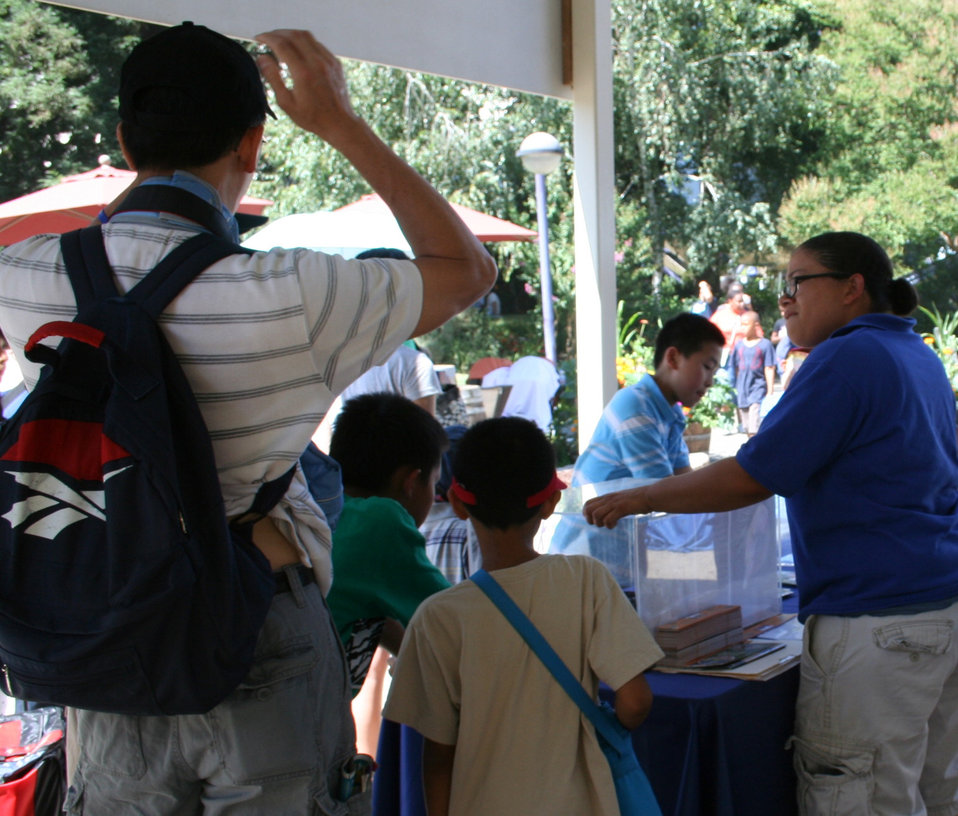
The condor display at the front of the booth

For the first time DOI agencies [US Fish & Wildlife Service, Bureau of Reclamation and Bureau of Land Management] joined together to host an America's Great Outdoors Booth at the California State Fair in Sacramento, Calif., July 14 - 31.

The booth included informational panels and displays as well as a children's activity area. Activities: wildlife masks, temporary tattoos, water-cycle bracelets, fish prints, touch boxes, scat bingo, a green-screen, coloring and bird bingo. Five days a week live raptors, snakes and bats were brought in.

About 50,000 children visitied the booth during the 18-day fair.